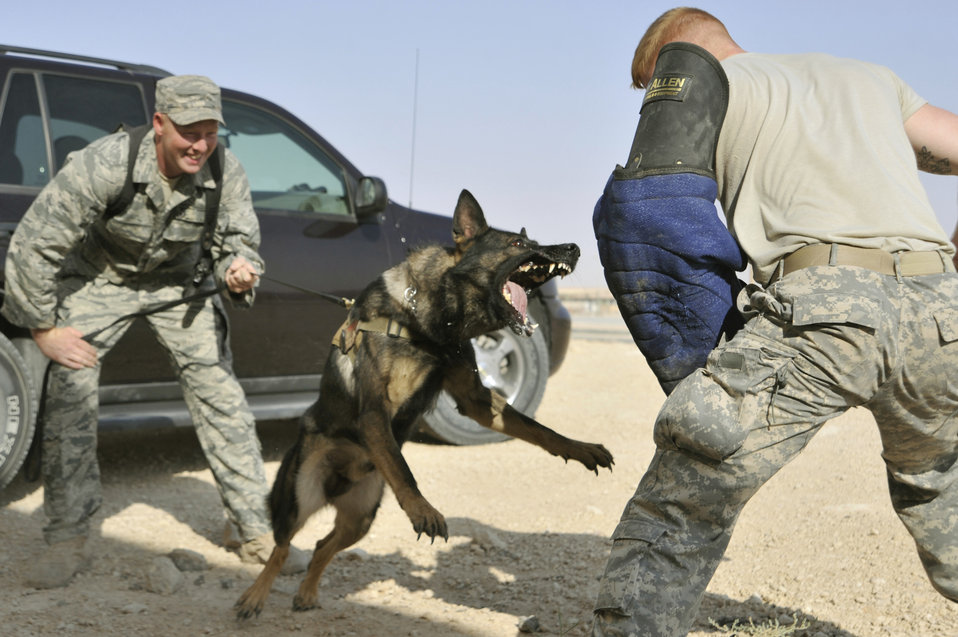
He doesn't like your smell

Military working dog Ali goes after U.S. Navy Seaman Andrew English, July 25, 2010, at Al Asad Air Base, Iraq. The handlers use a padded sleeve to protect themselves from the dogs during training. Seaman English is a military working dog handler deployed from Naval Air Station Key West, Fla.